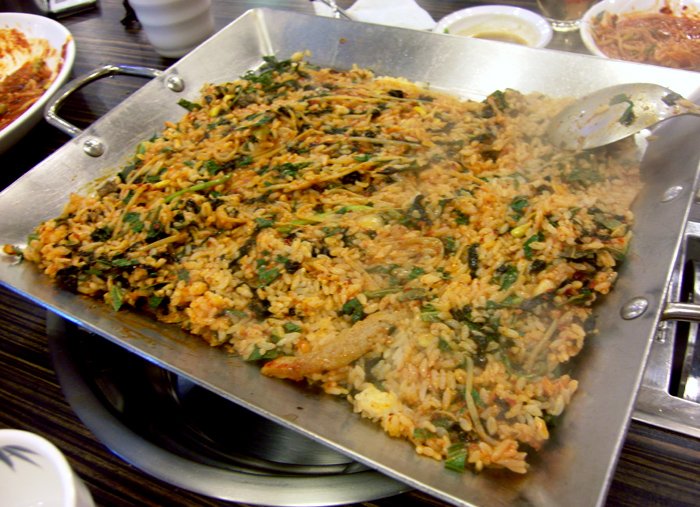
Bokkeumbap made with remaining agujjim sauce